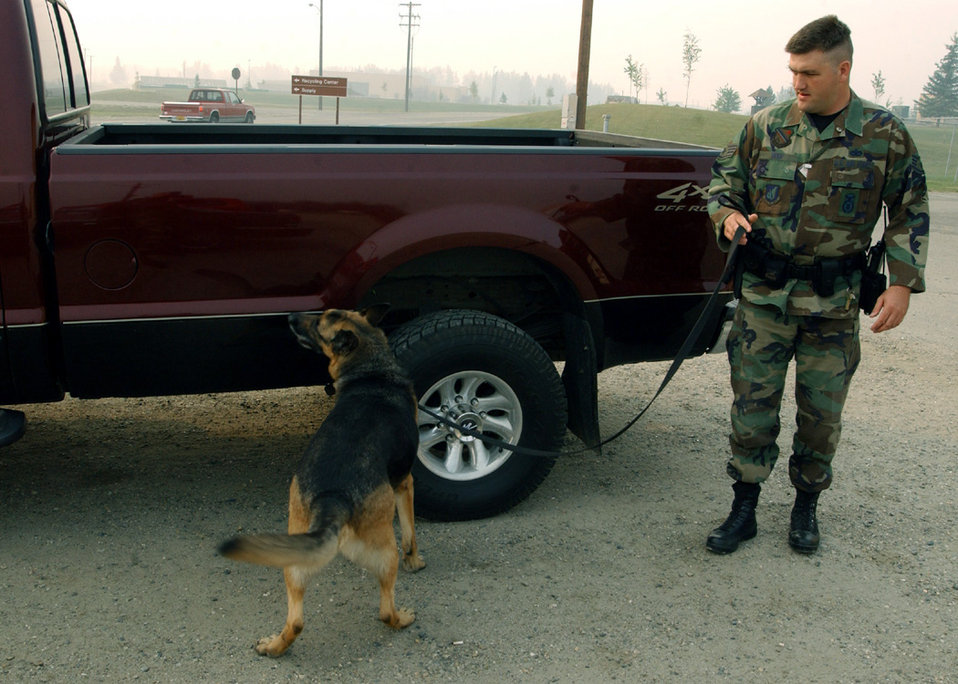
Dog patrol

EIELSON AIR FORCE BASE, Alaska -- Staff Sgt. Robert Houp and Rin Tin, a military working dog, inspect a truck for contraband during training Aug. 18. Military working dogs here provide anti-terrorism and security to the base as well as to deployed locations worldwide. Rin Tin's day usually begins at 4 a.m. with feeding and a seven-point checkup by his handler. Then comes grooming, a rub down, obedience training and a run through the confidence course before beginning the day on patrol. Sergeant Houp and the 7-year-old 98-pound German shepherd are assigned to the 354th Security Forces Squadron.